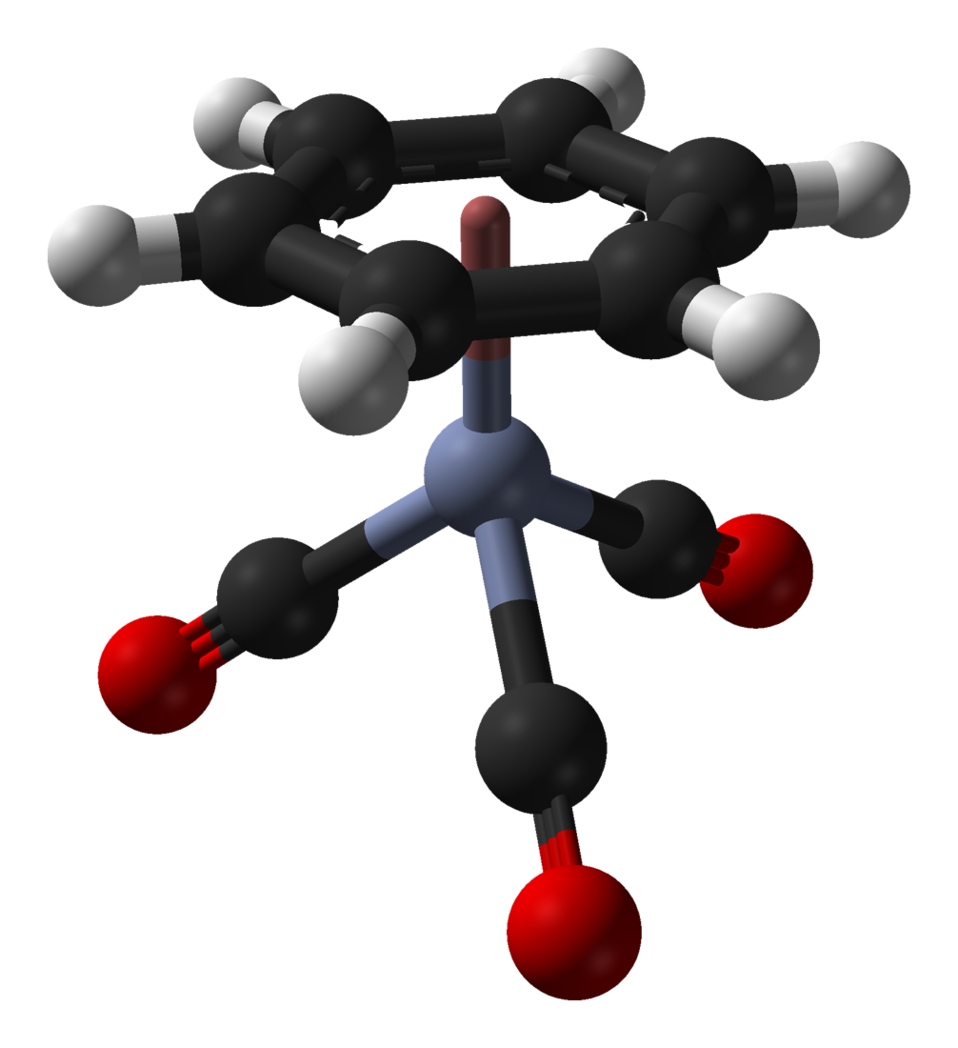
Ball-and-stick model of the (benzene)chromium tricarbonyl molecule, [(C6H6)Cr(CO)3]. X-ray diffraction data from J. Am. Chem. Soc. (1987) 109, 587–589. Model constructed in CrystalMaker 8.1. Image generated in Accelrys DS Visualizer.